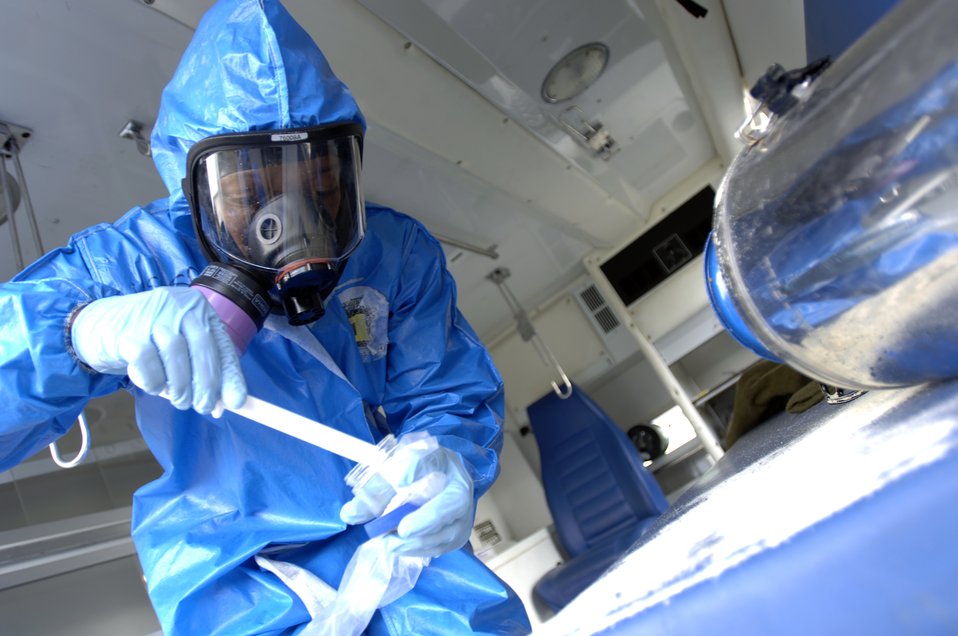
Airmen compete in training challenge

Staff Sgt. Jared Thomas collects samples of spilled powder at a simulated ambulance crash scenario at the Chemical Biological Radiological Nuclear Challenge at Brooks City-Base, San Antonio, Sept. 15. Sergeant Thomas is a participant from Air Mobility Command.